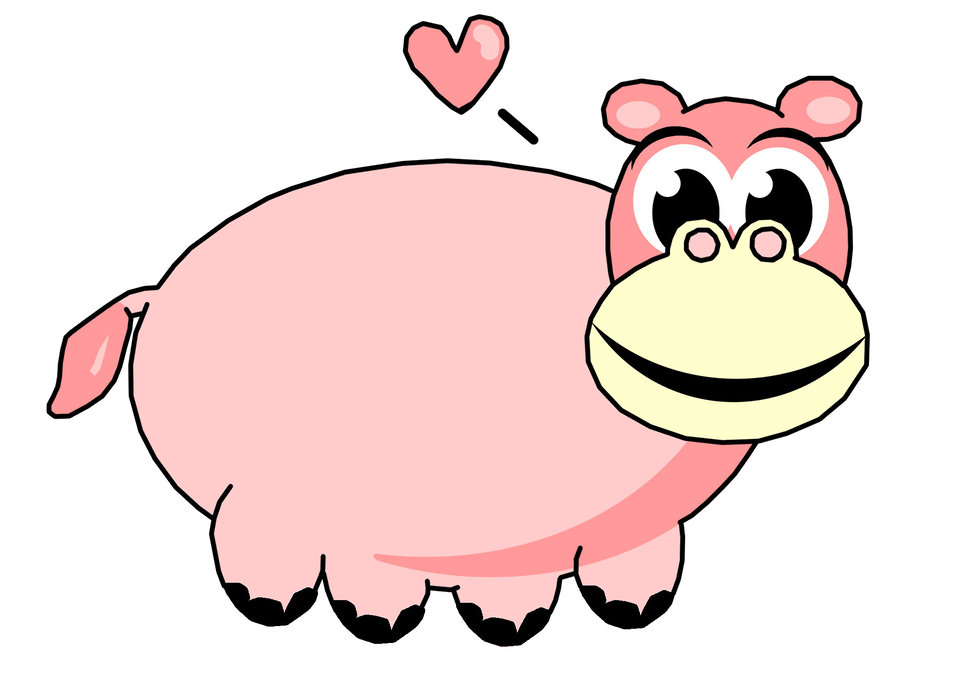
Pink hippo clip art.